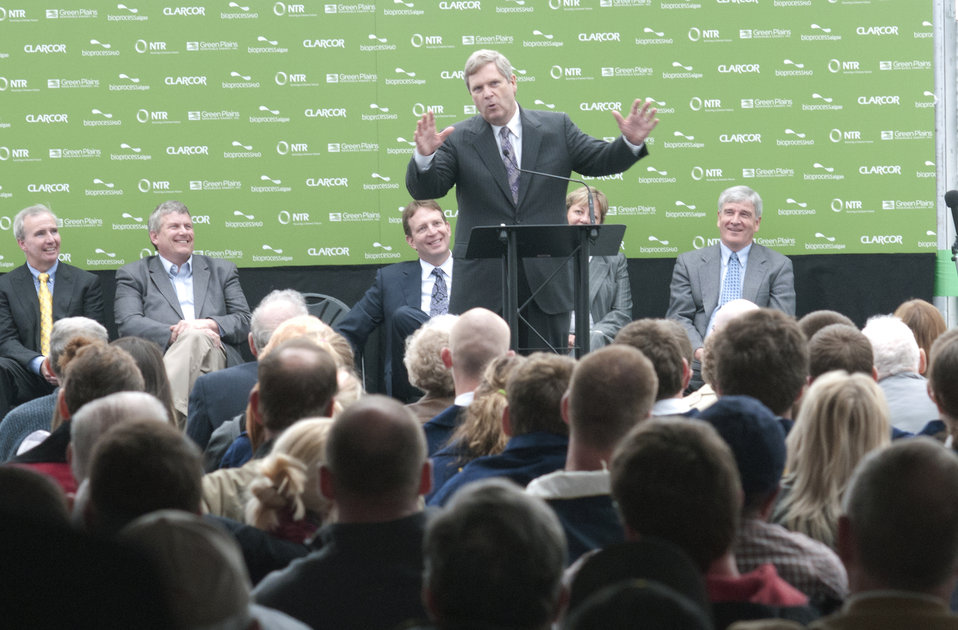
Agriculture Secretary Tom Vilsack speaks at the Grand Opening ceremony of Phase II of the BioProcess Algae facility at Green Plains Renewable Energy (GPRE) Inc. on Friday, Apr. 15, 2011 in Shenandoah, IA. Phase II is a key component in the commercial scale photo bioreactors/harvesters. The operation is co-located within an GPRE’s ethanol factory where BioProcess Algae technology is used to treat waste products; carbon dioxide, recycled heat and water to mass-produce algae. Algae from this facility are used for animal feeds, pharmaceutical and beauty products.